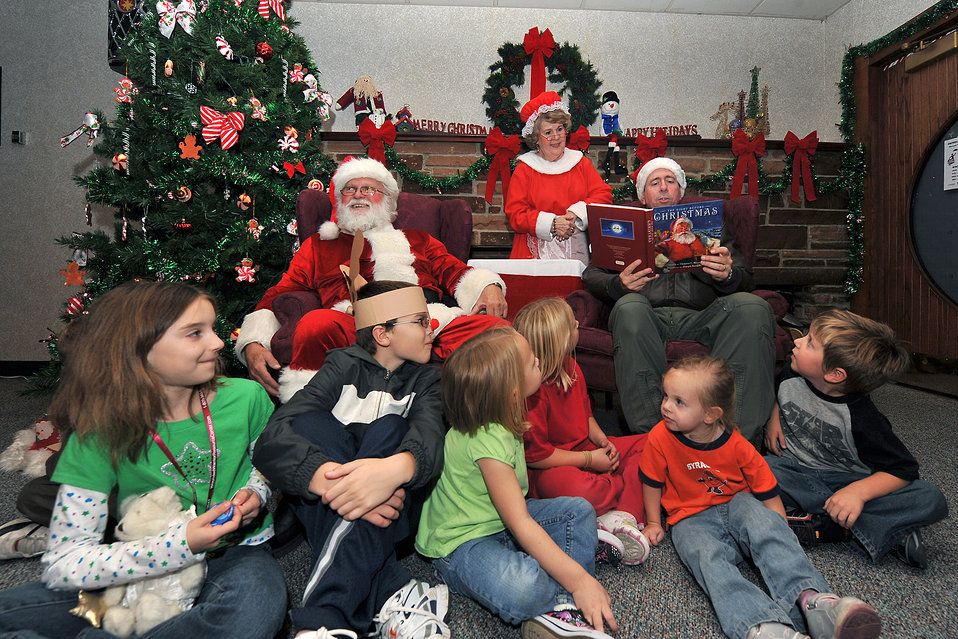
Santa's reading partner

Brig. Gen. John N.T. Shanahan, 55th Wing commander, reads a book to children in the community activity center Nov. 16, 2010, at Offutt Air Force Base, Neb, during a holiday connection event. The event, established in 2000, provides support for the loved ones of military members deployed during the holiday season.